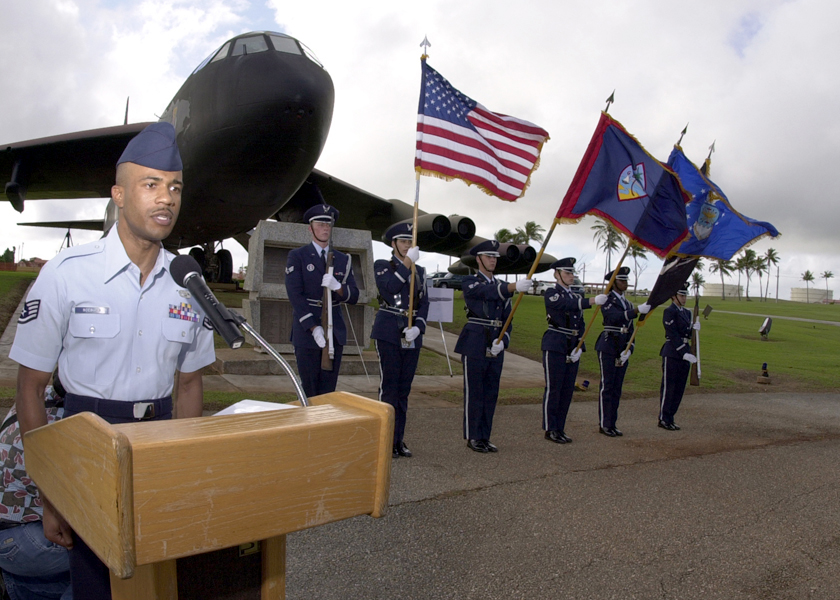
Honoring fallen airmen

ANDERSEN AIR FORCE BASE, Guam -- Staff Sgt. Calvin Roebuck Jr. sings